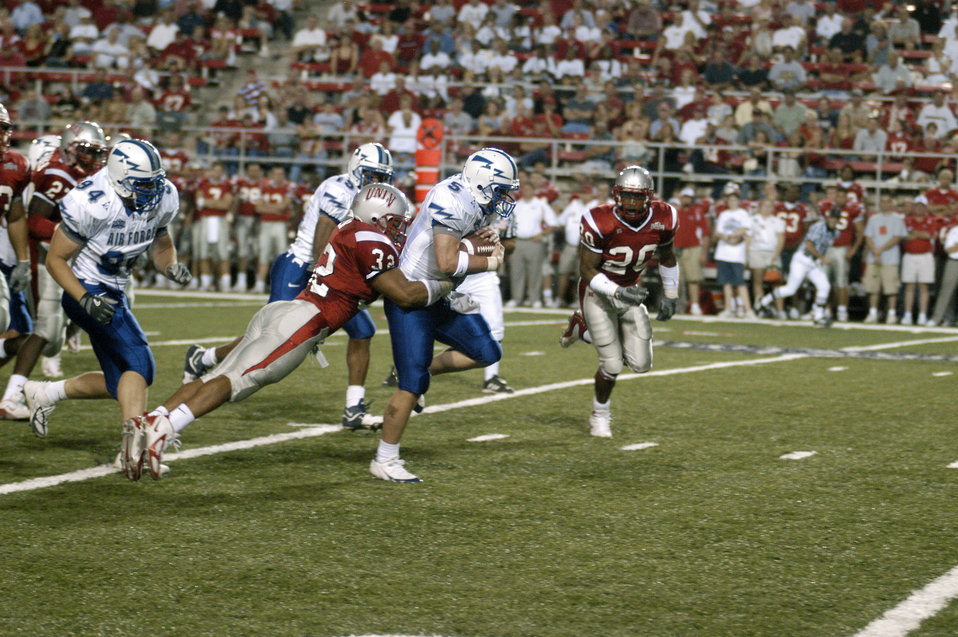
Falcons defeat UNLV, 27-10

LAS VEGAS -- University of Nevada-Las Vegas linebacker Reggie Butler pulls Air Force Academy quarterback Shaun Carney down after a long gain. Carney rushed for 58 yards and passed for 139 more, during the Falcon's 27-10 victory over UNLV in their Sept. 18 conference opener. The Falcons next play No. 15 Utah on Sept. 25.